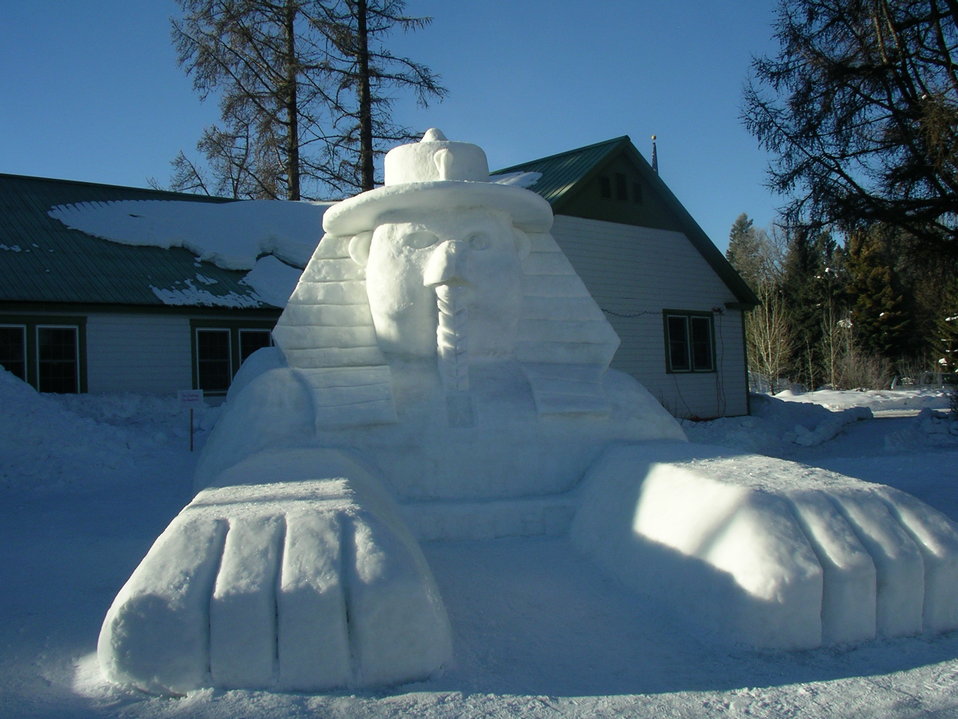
Smokey Snow Sculpting 4

The “Great Smokey Sphinx,” the largest sculpting effort by Forest Service volunteers, put the Payette National Forest on the snow sculpture scene at the Winter Carnival snow sculpture contest in McCall, ID. A team of Forest Service volunteers from the Payette National Forest all volunteer their off-duty time to participate in the snow sculpting and Smokey Bear is routinely part of their team.